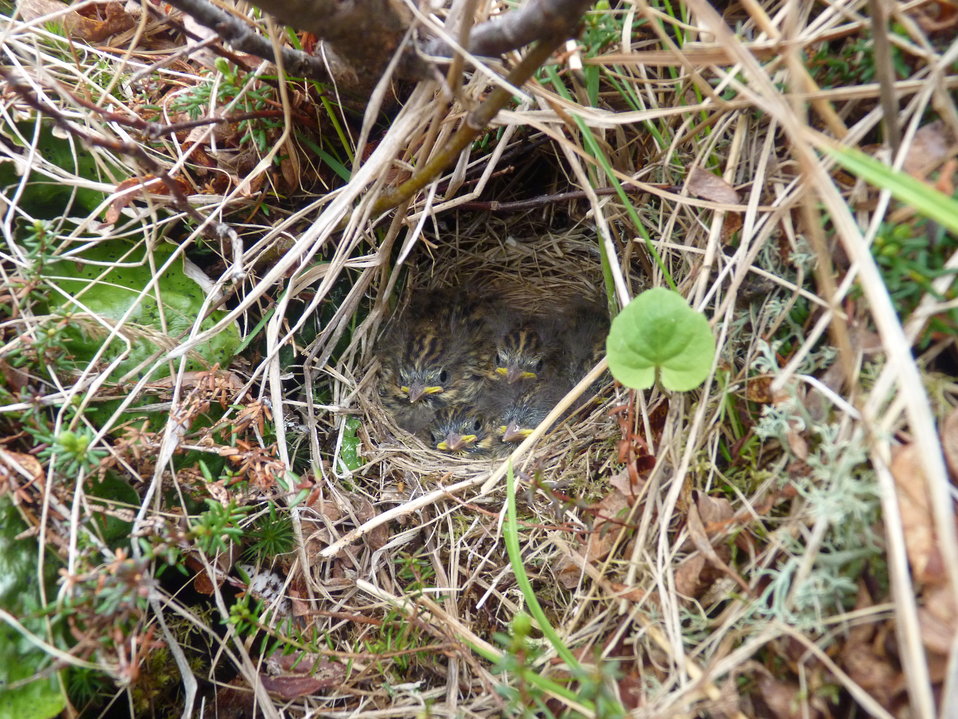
Savannah Sparrow nest

Andreafsky wilderness, Yukon Delta National Wildlife Refuge